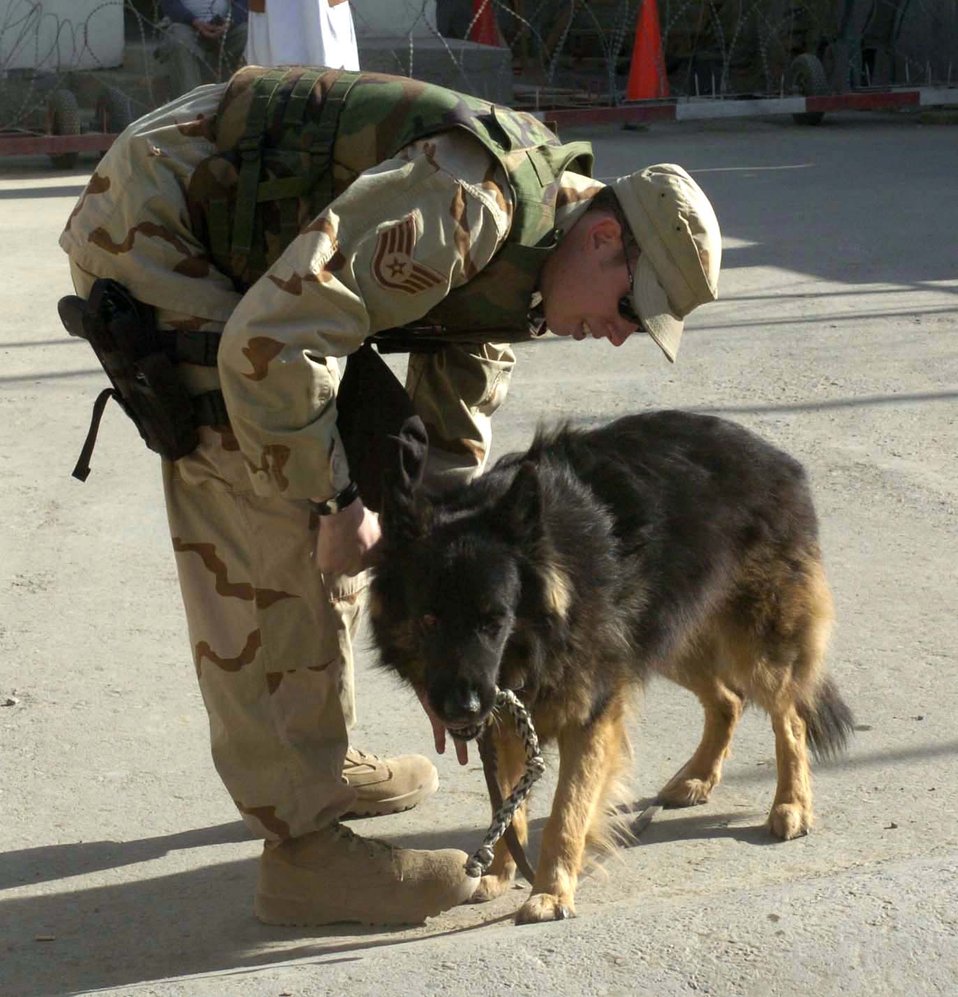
Good ol' boy

KABUL COMPOUND, Afghanistan -- Staff Sgt. David Yepsen rewards his military working dog, Dax, with a toy after Dax found an item Sergeant Yepsen hid in a vehicle for training purposes. The two are the only Air Force canine team in Afghanistan. They are deployed supporting Operation Enduring Freedom from the 43rd Security Forces Squadron at Pope Air Force Base, N.C.